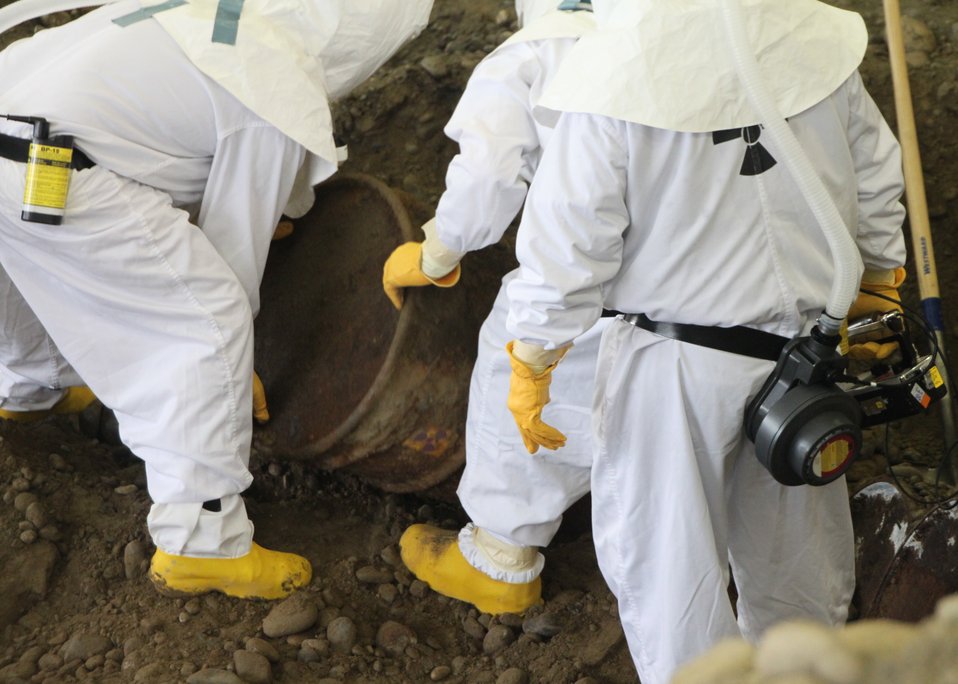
Hanford Richland Waste Cleanup

A container of waste is excavated from an underground storage trench at the Hanford Site. Recovery Act workers place the container into protective covering and it is hoisted from the trench and staged adjacent to the trench for processing.